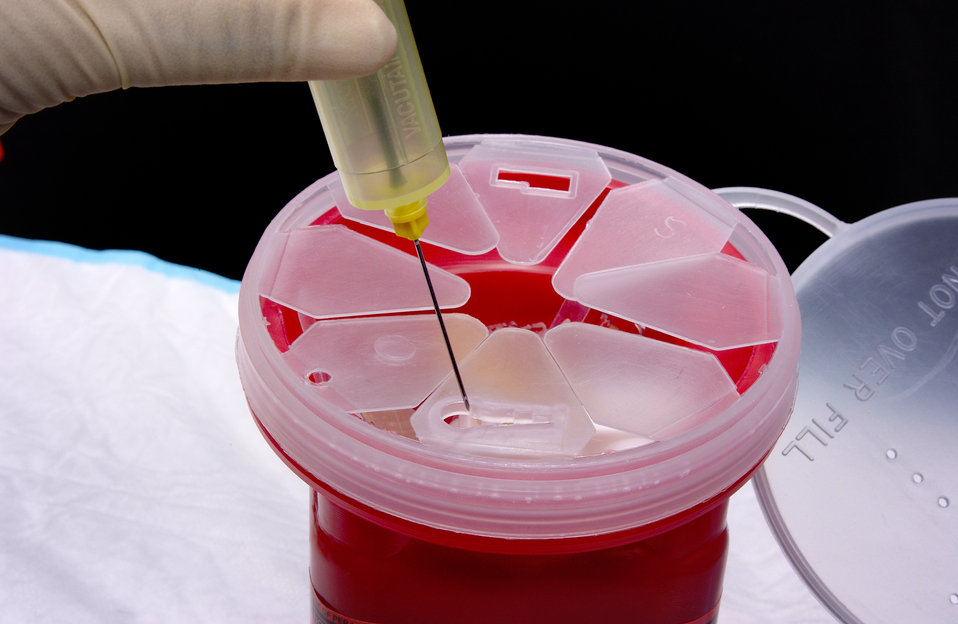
This image depicts a trained phlebotomist, i.e., a technician skilled in the practice of drawing blood from a patient, who was appropriately disposing materials used in performing a venipuncture procedure. This image is the eighteenth in a series of 19 images outlining the steps involved in extracting blood during the venipuncture process.